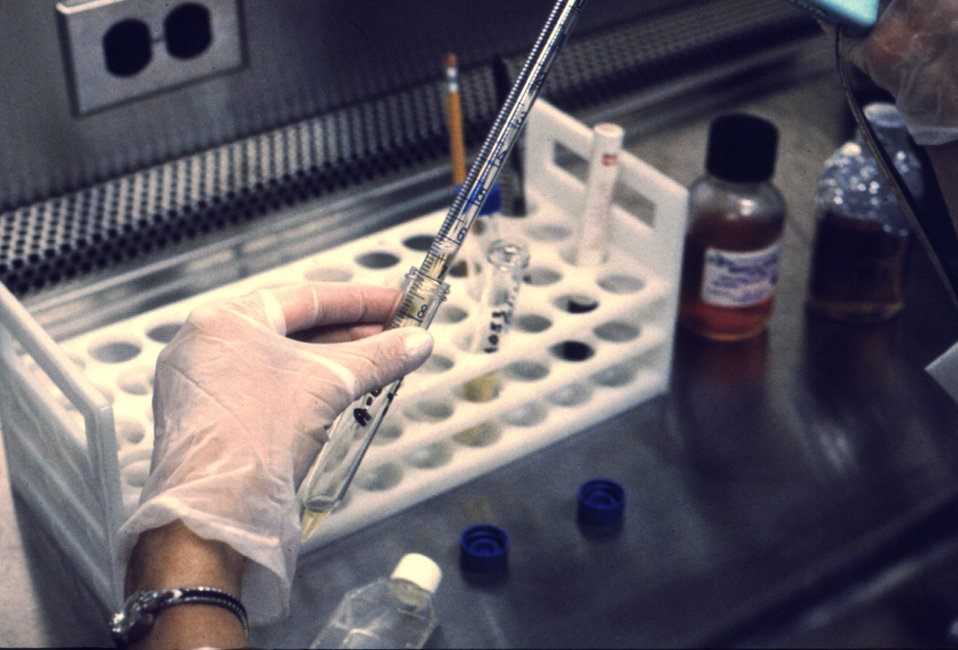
This laboratorian is diluting an amniotic fluid cell culture using fetal calf serum under a vertical laminar-flow hood.